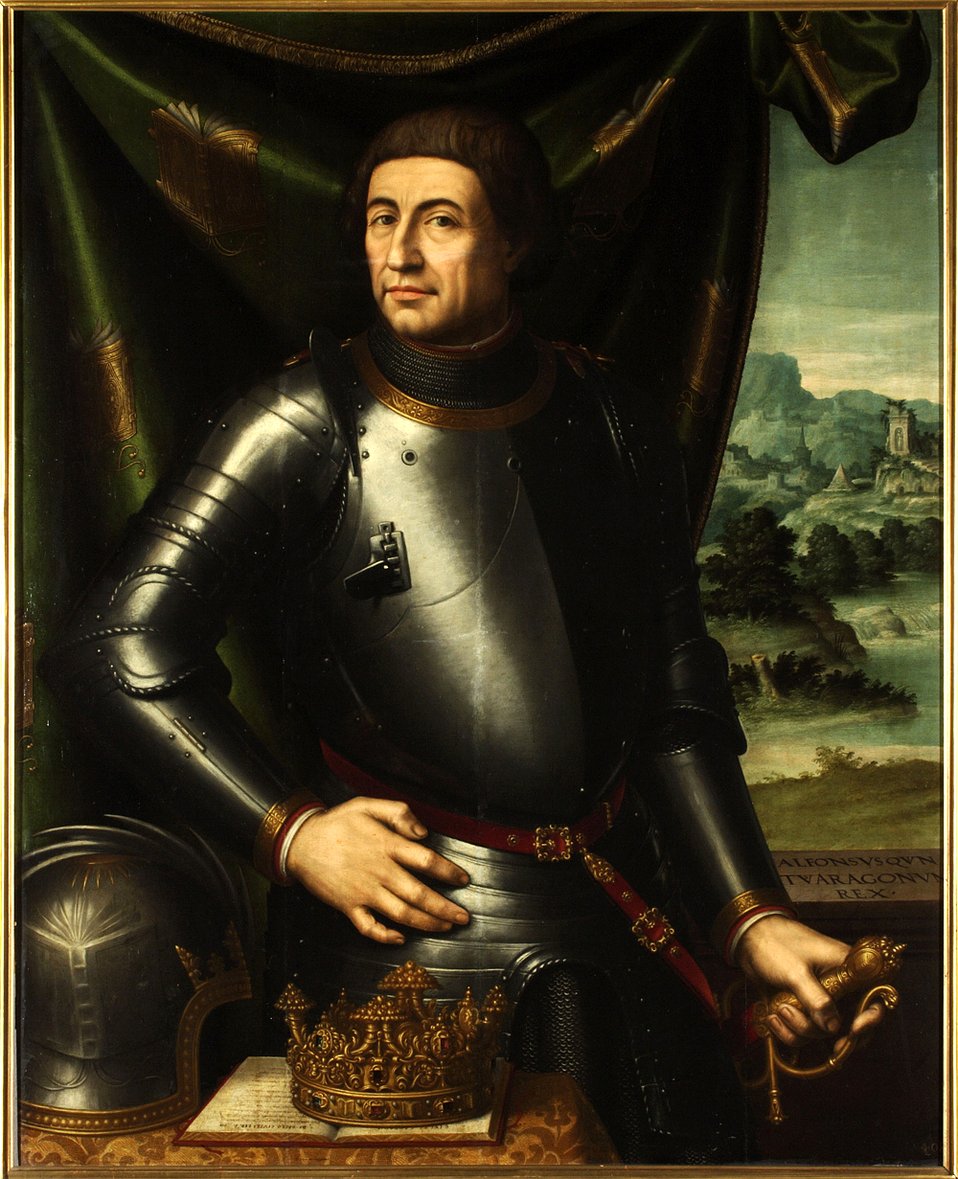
Alfonso V rey de Aragón